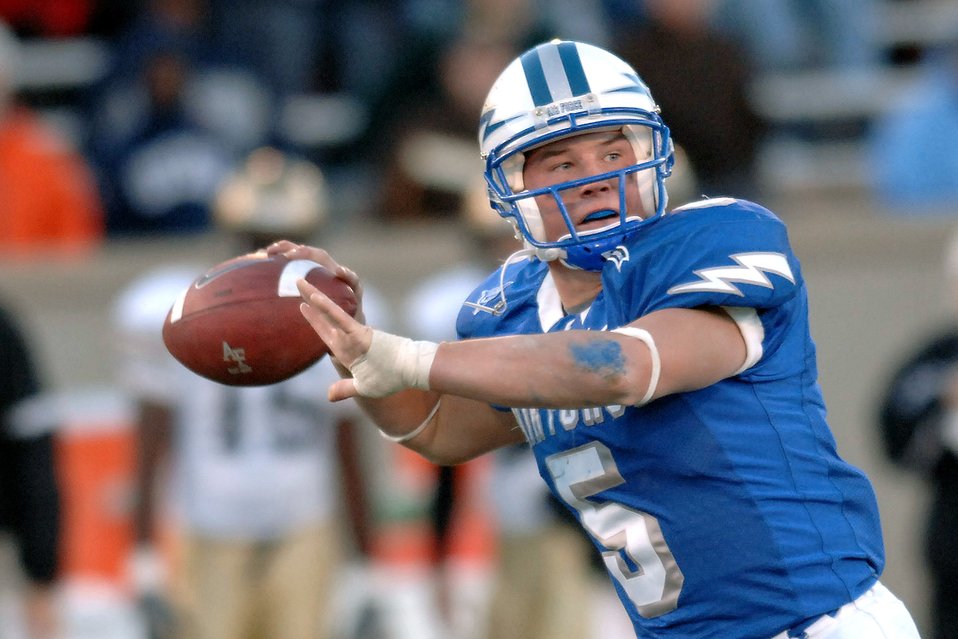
Falcons set to recapture Commander-in-Chief's Trophy

Air Force Head Coach Fisher DeBerry watches from the sidelines during the 2005 season. Though the season ended as the first consecutive losing season in more than two decades, DeBerry and the Falcons are determined to return a winning record as well as the Commander-in-Chief's Trophy to the academy in 2006.